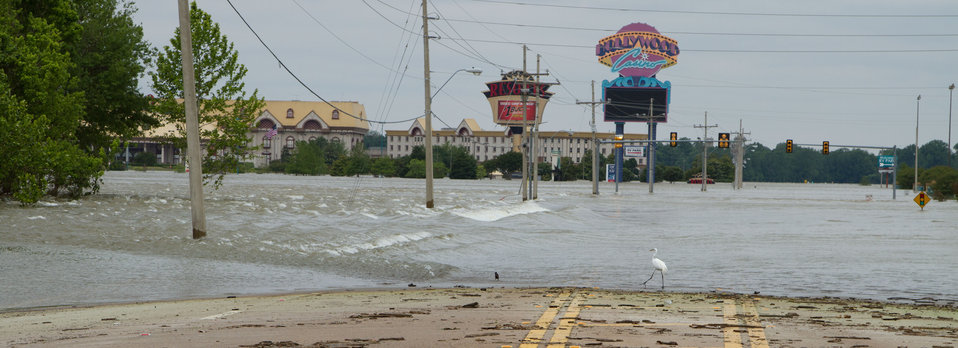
Floods waters from Mississippi River inundated casinos and farms that surround Tunica, MS, on Sunday, May 15. 2011.